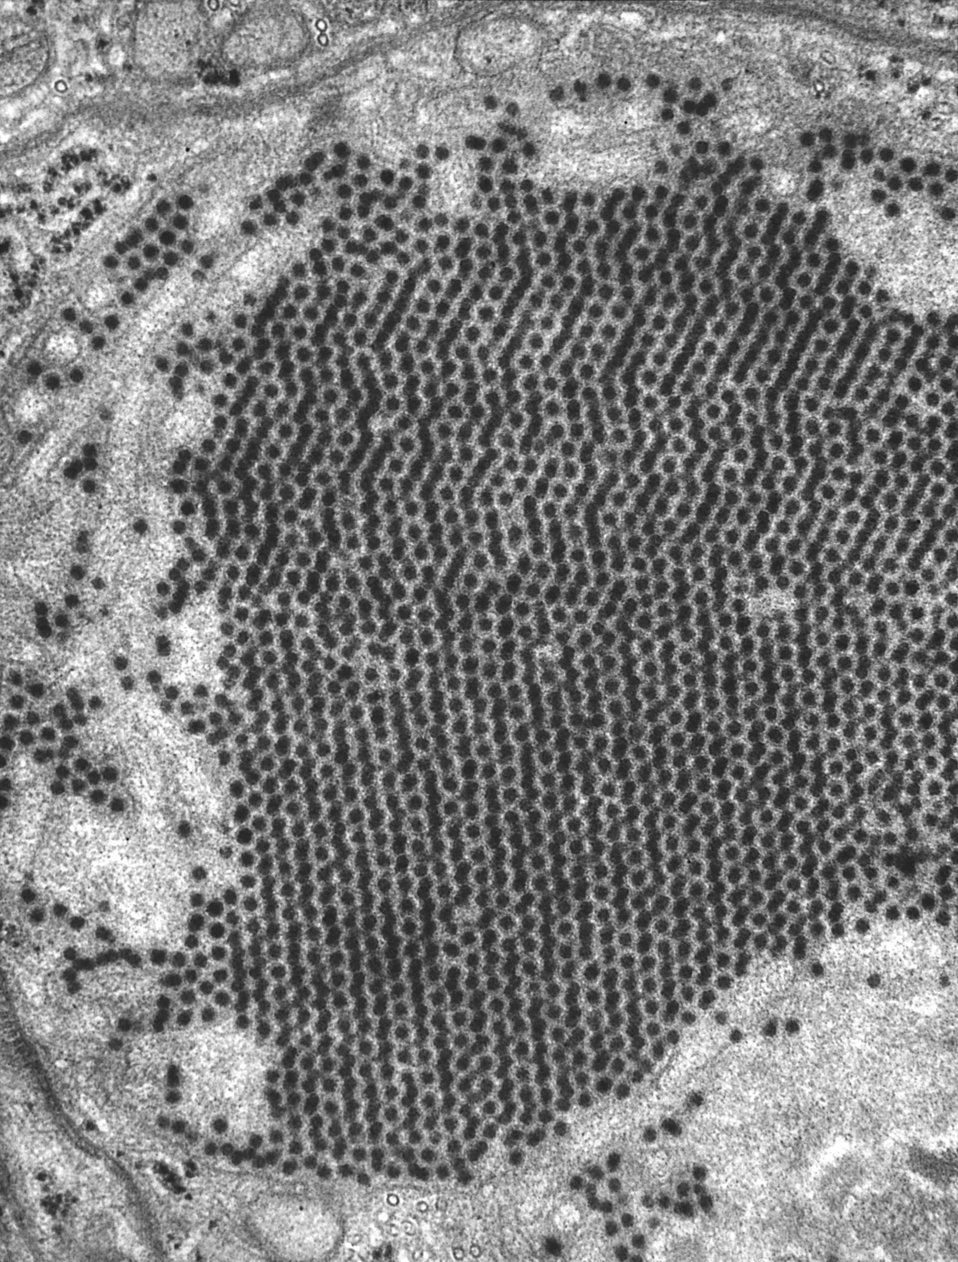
This negatively-stained transmission electron micrograph (TEM) revealed the presence of numerous St. Louis encephalitis virions that were contained within a mosquito salivary gland tissue sample. St. Louis encephalitis (SLE) virus is a member of the genus Flavivirus, family Flaviviridae. Other similar diseases are West Nile virus (WNV), eastern equine encephalitis (EEE), western equine encephalitis (WEE), and La Crosse encephalitis.